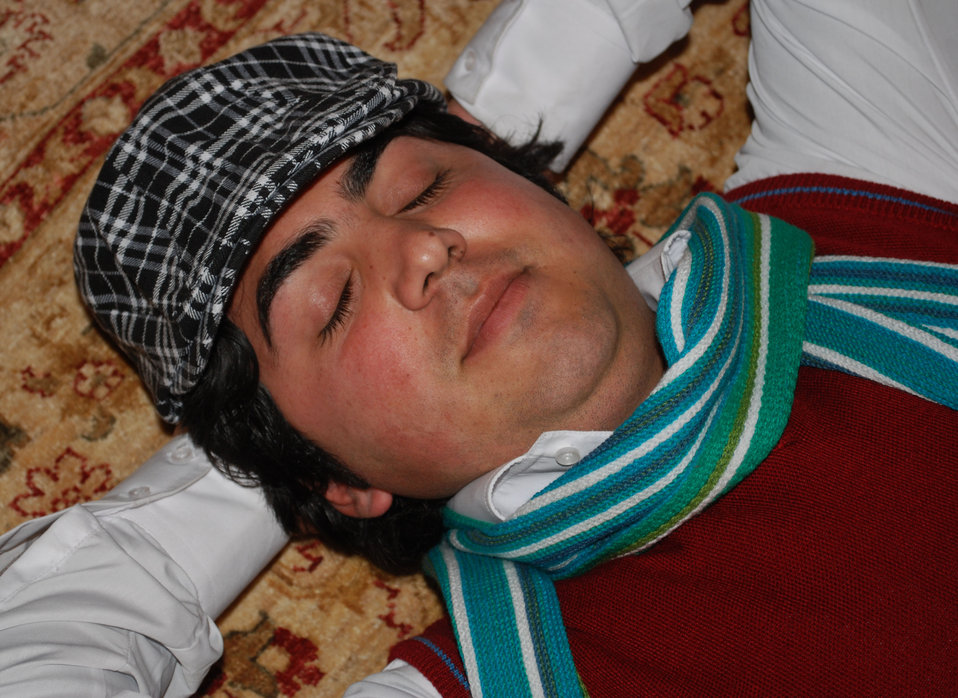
'On the Road' in Nangarhar Province